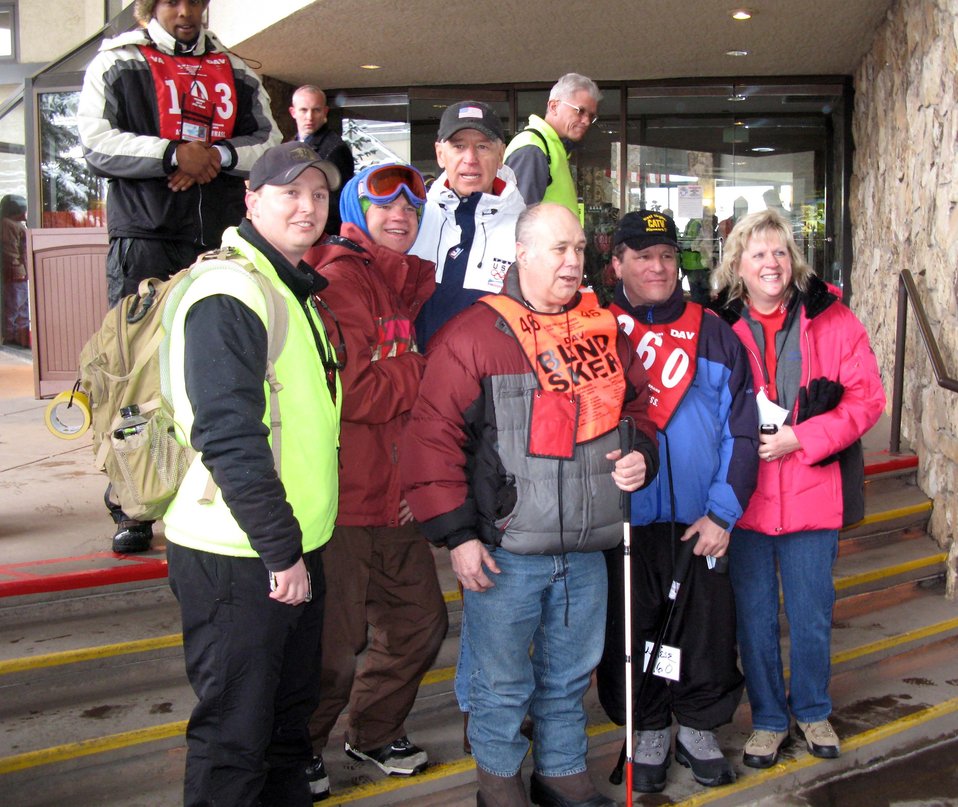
Disabled veterans sports clinic opens in Colorado

Vice President Joe Biden meets some of the participants March 28, 2011, at the 25th National Disabled Veterans Winter Sports Clinic in Snowmass Village, Colo.